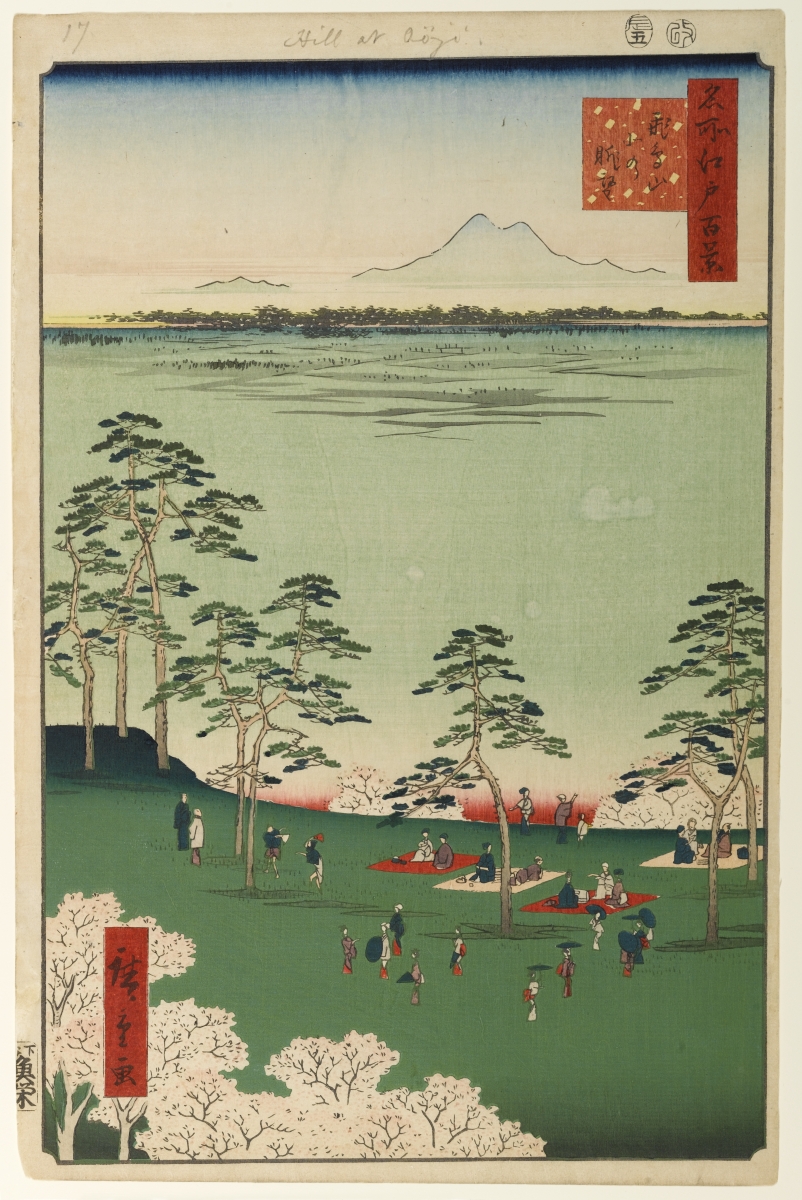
100 views edo 017